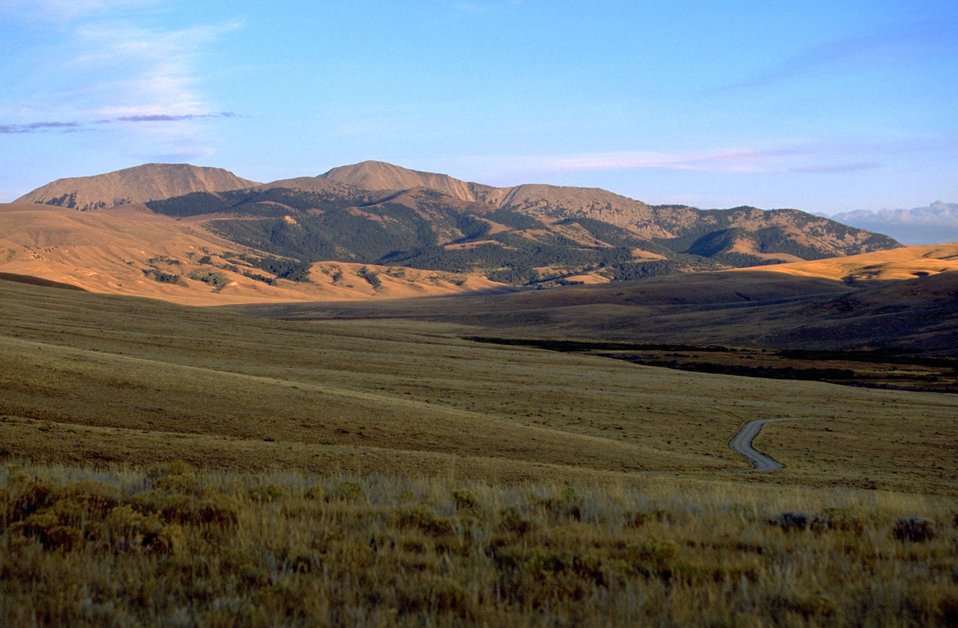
Grassy hills leading down to creek with mountains in the background